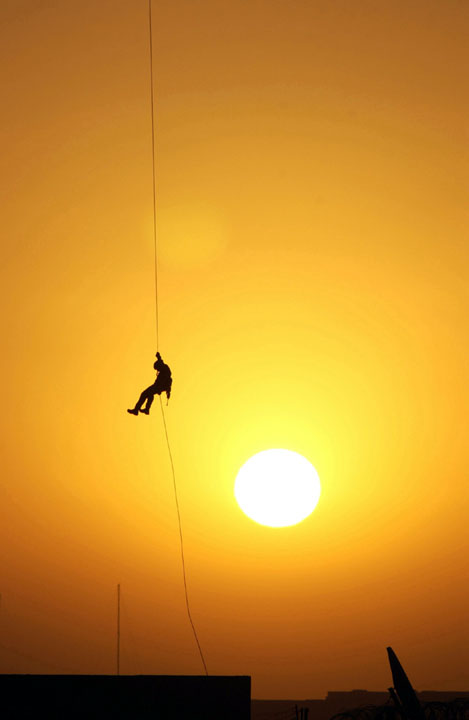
A line in the sun

OPERATION IRAQI FREEDOM -- An Air Force Reserve pararescueman assigned to the 304th Rescue Squadron, Portland International Airport, rappels from the Baghdad International Airport air traffic control tower during an exercise. Squadron airmen are deployed to the airport supporting Operation Iraqi Freedom.